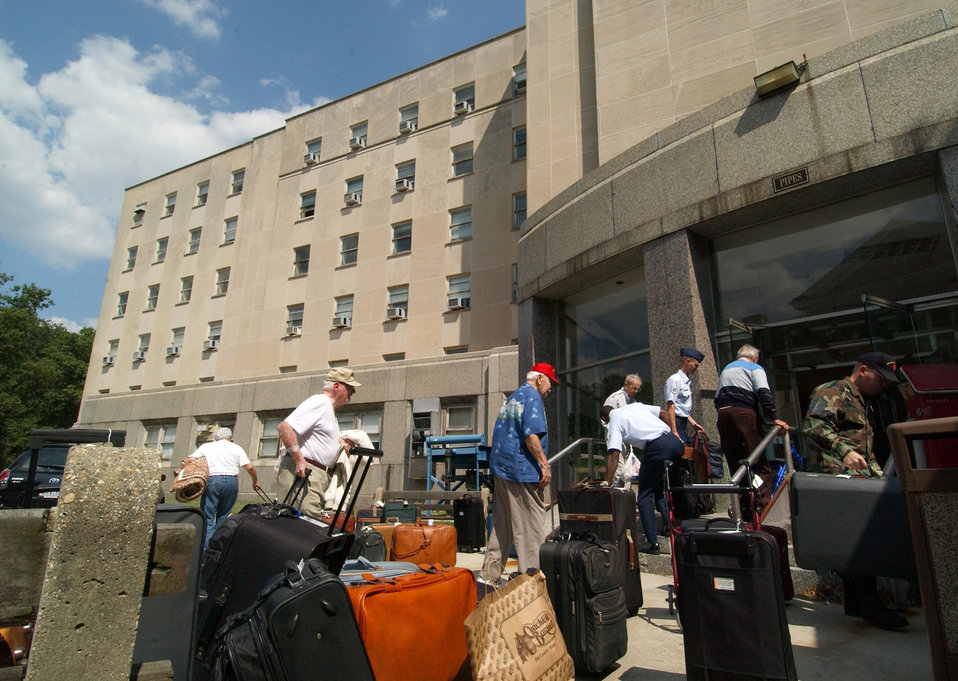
Airmen spruce up living space for retirees displaced by Katrina

WASHINGTON -- Armed Forces Retiree's and some of the more than 100 military and civilian volunteers gather up luggage as they enter the Armed Forces Retirement Home here Sept. 1. The veterans from Gulfport, Miss., were displaced by the effects of Hurricane Katrina and will be housed at the retirement home here until their facility can be repaired, which is estimated to take more than a year.